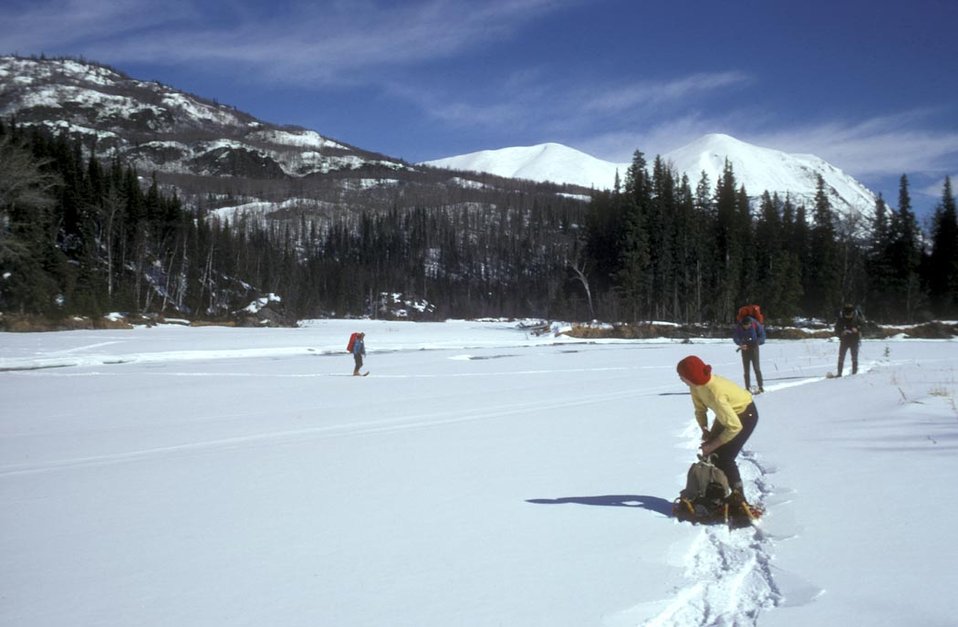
snowshoeing at Kenai Refuge